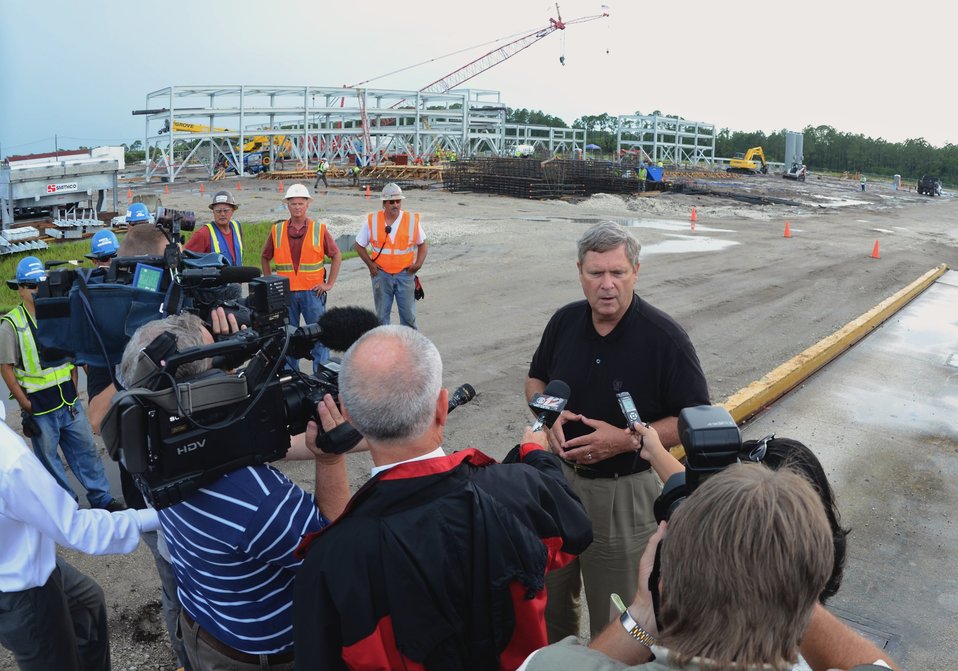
Agriculture Secretary Tom Vilsack visited the waste-to-energy bioprocessing facility under construction in Florida today to announce several small grants to support research into renewable fuels. The INEOS New Planed BioEnergy facility in Vero Beach, Florida, was granted a conditional Agriculture loan guarantee earlier this year to help build and operate a biorefinery capable of producing 8 million gallons per year of cellulosic ethanol and 6 megawatts of electricity.